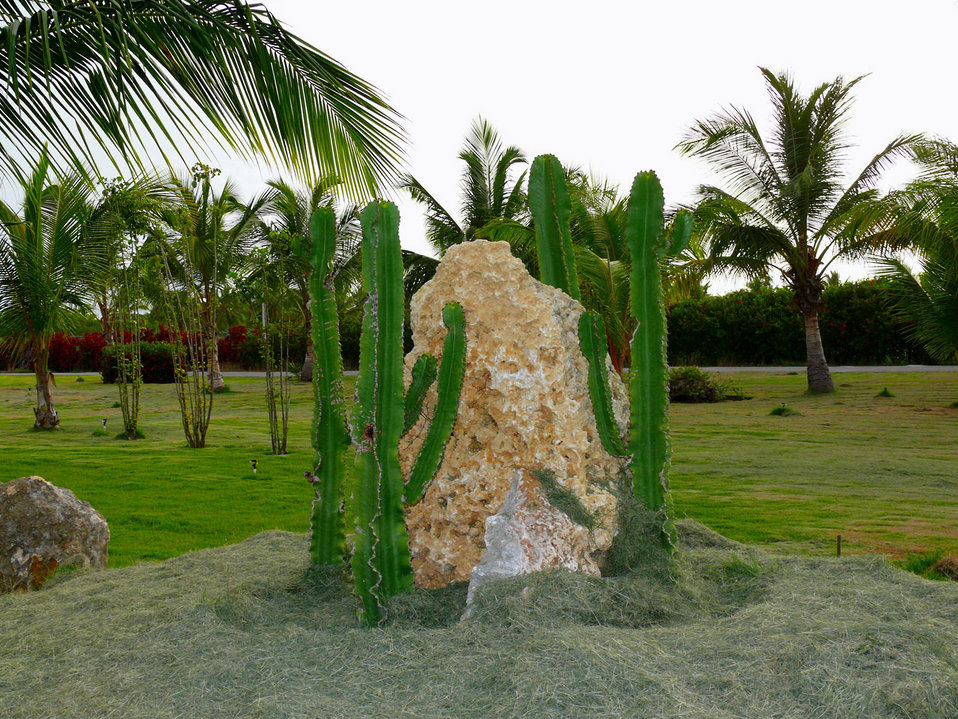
Cactus in nature environment.